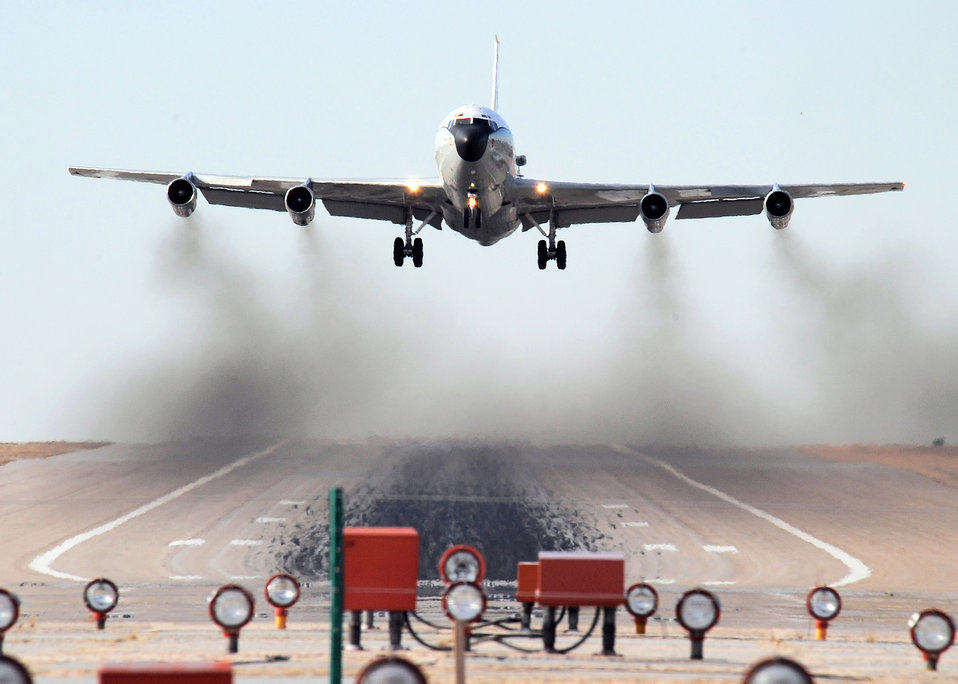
Practice makes perfect

Throughout the afternoon, an WC-135W Constant Phoenix aircraft performs touch 'n go landing exercises Feb. 12 at Offutt Air Force Base, Neb.